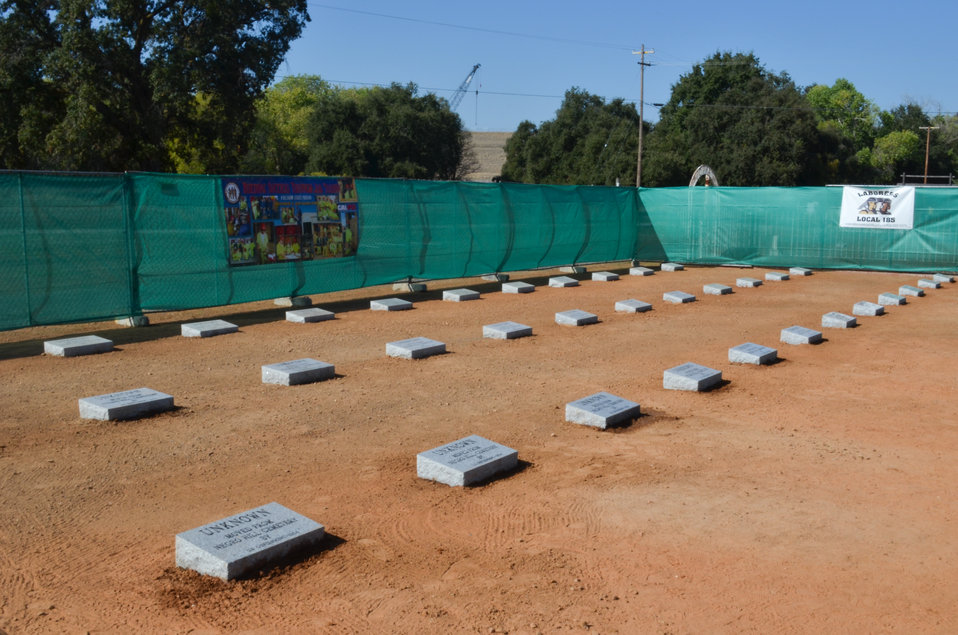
Replacing offensive grave markers at Mormon Island Relocation Cemetery

New grave markers at Mormon Island Relocation Cemetery in El Dorado Hills, Calif., shown Oct. 19, 2011, replace original markers for graves moved from Negro Hill Cemetery that contained an offensive racial epithet. The U.S. Army Corps of Engineers Sacramento District moved the 36 graves from the original Negro Hill Cemetery to the relocation cemetery during the construction of Folsom Dam in 1954, and created the offensive markers. El Dorado County, which manages the cemetery, and the California Prison Industry Authority collaborated on the project to replace the markers.